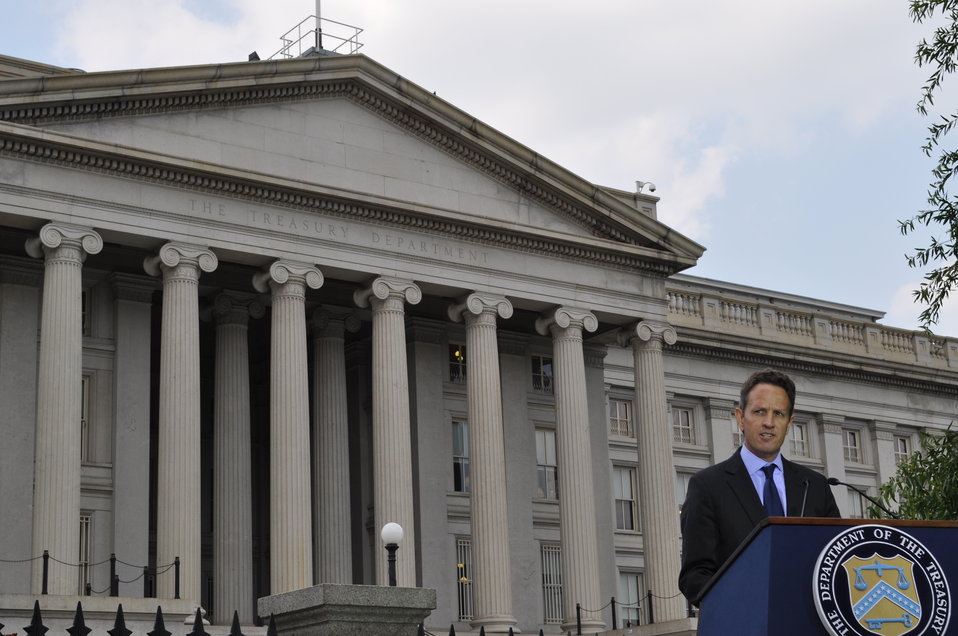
Passage of Financial Reform, 07/15/10

'The message of this bill is clear: banks – not the taxpayers – will pay for future bank failures and consumers will be protected,' said Treasury Secretary Tim Geithner on the 'Wall Street Reform and Consumer Protection Act' after its passage on Thursday, July 15, 2010.